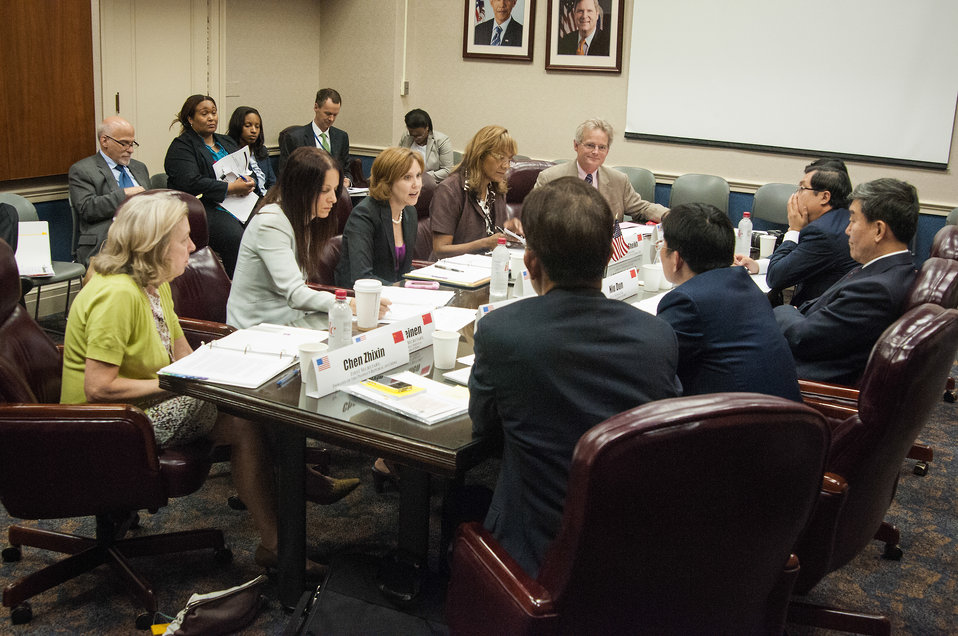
U.S. Department of Agriculture (USDA) Acting Under Secretary, Farm and Foreign Agricultural Services (FFAS) Darci Vetter (left) and Vice Minister, Minister of Agriculture, People’s Republic of China Niu Dun (right) discuss the U.S. China Joint Committee on Cooperation in Agriculture (JCCA) at USDA in Washington, D.C. on Tuesday, Jun. 9, 2013.